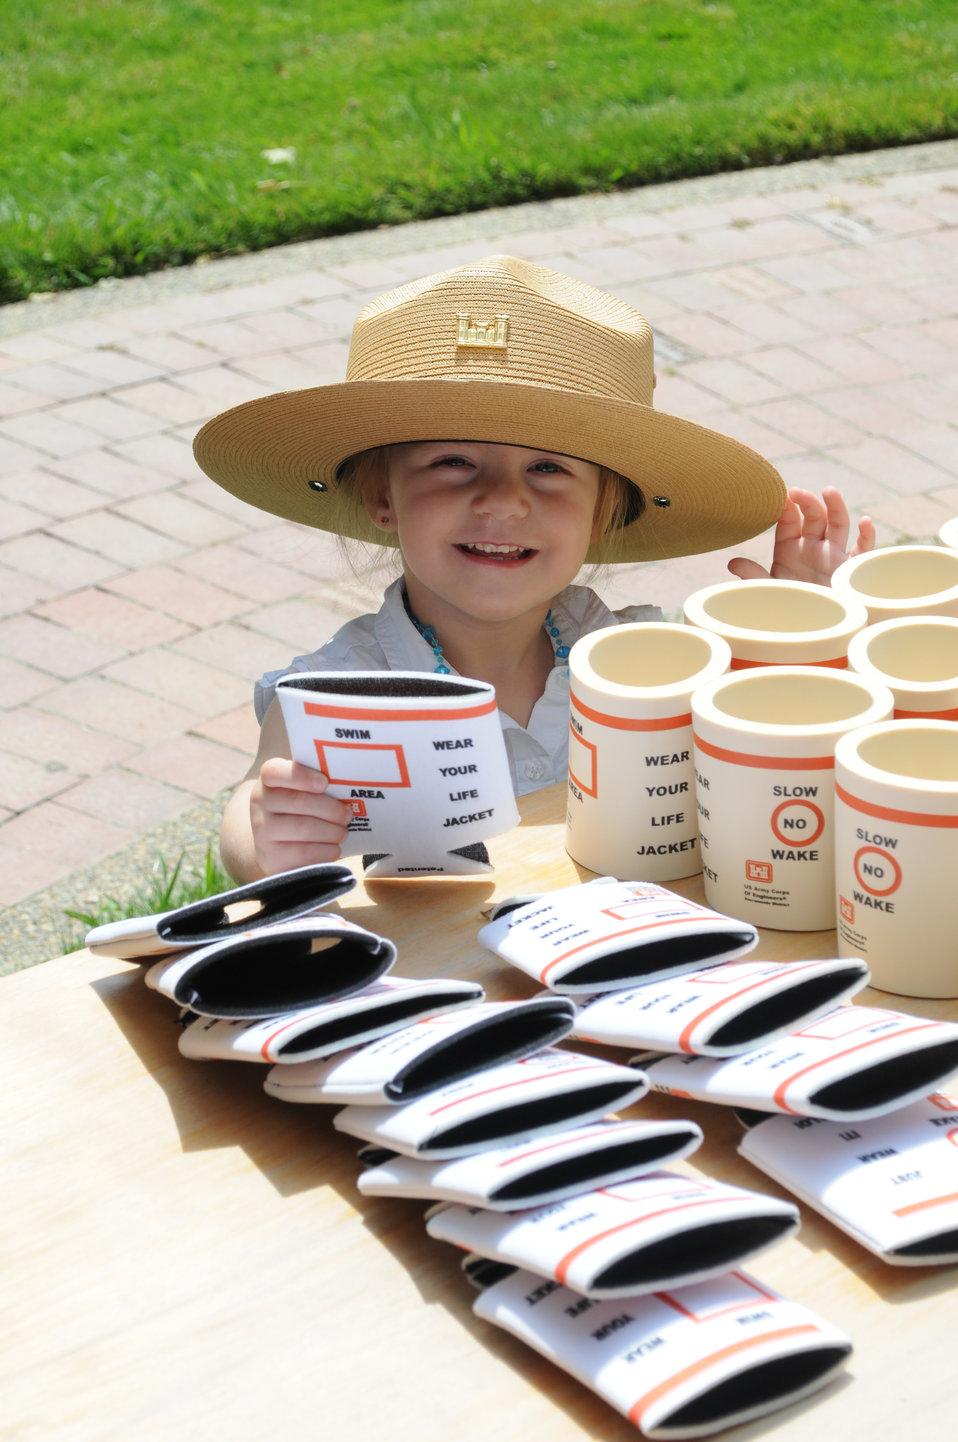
Water safety tips at Safetyville USA

Natalie Kelly tries on a Corps park ranger hat at the 13th annual Family Health and Safety Day in Sacramento, Calif., June 11, 2011. “We are so glad to learn more about water safety, since the American River is right in our backyard,” said Julie Kelly, Natalie’s mother. “Right now, the water is really high, and very cold. In fact the trail is almost covered in water,” said Kelly, “and we have to be extra careful.”